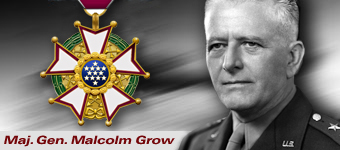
Maj. Gen. Malcolm Grow, heritage spotlight.